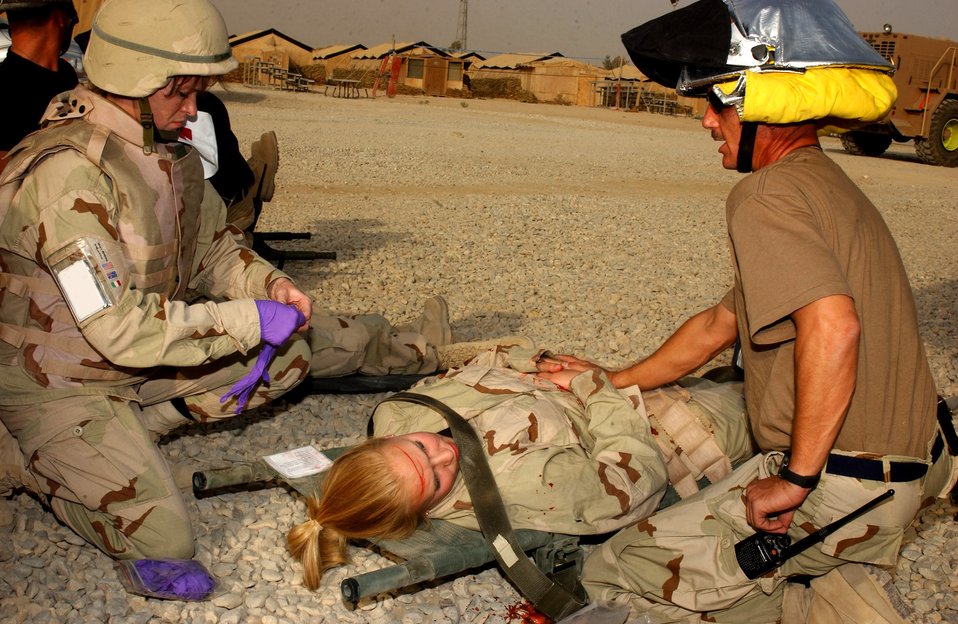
Operation Iraqi Freedom

ALI BASE, Iraq (AFPN) -- Senior Airman Dora Sherrill (left) and Tech. Sgt. James Ralls keep pressure on a (training) life-threatening open abdominal wound until the patient stabilizes enough for transport. Airman Sherrill, a medical technician, and Sergeant Ralls, a firefighter, took part in an Oct. 20 mass casualty exercise here.